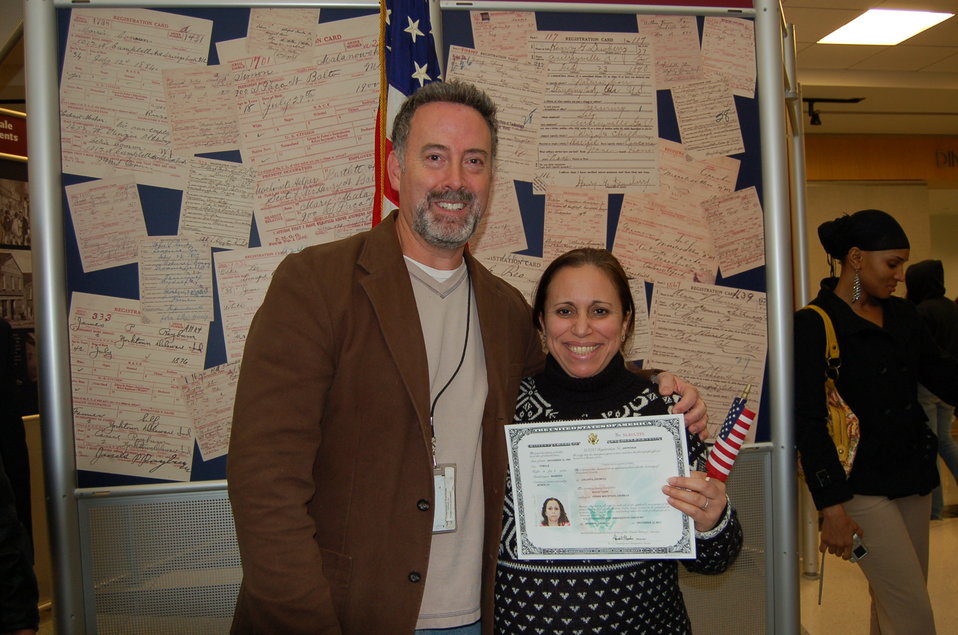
New Citizens